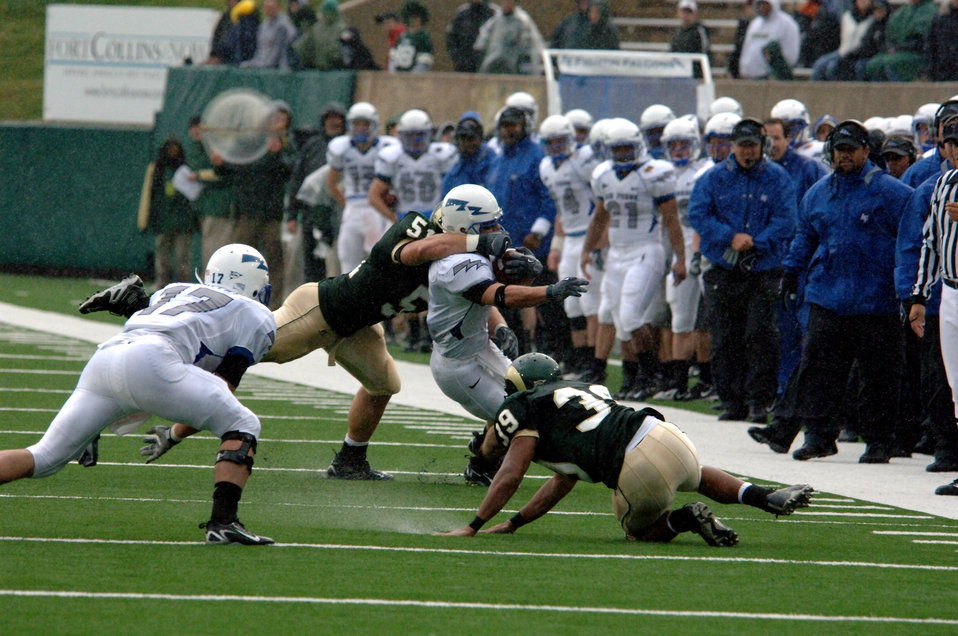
Football: Falcons, Hall run roughshod over CSU

Colorado State linebacker Connor Smith grabs a handful of Falcon Chad Hall's face mask during the bluesuiters' 45-21 win over the Rams Oct. 13 in Fort Collins, Colo. The play didn't slow Hall down as he set the Academy's all-time single-game rushing record with 256 yards on 31 carries.